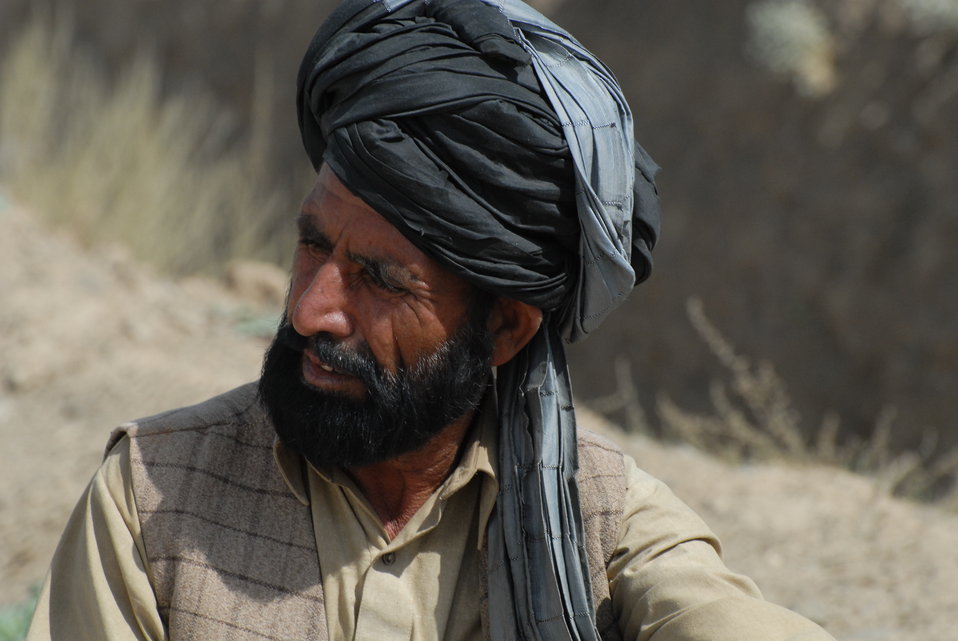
'On the Road' in Paktya Province